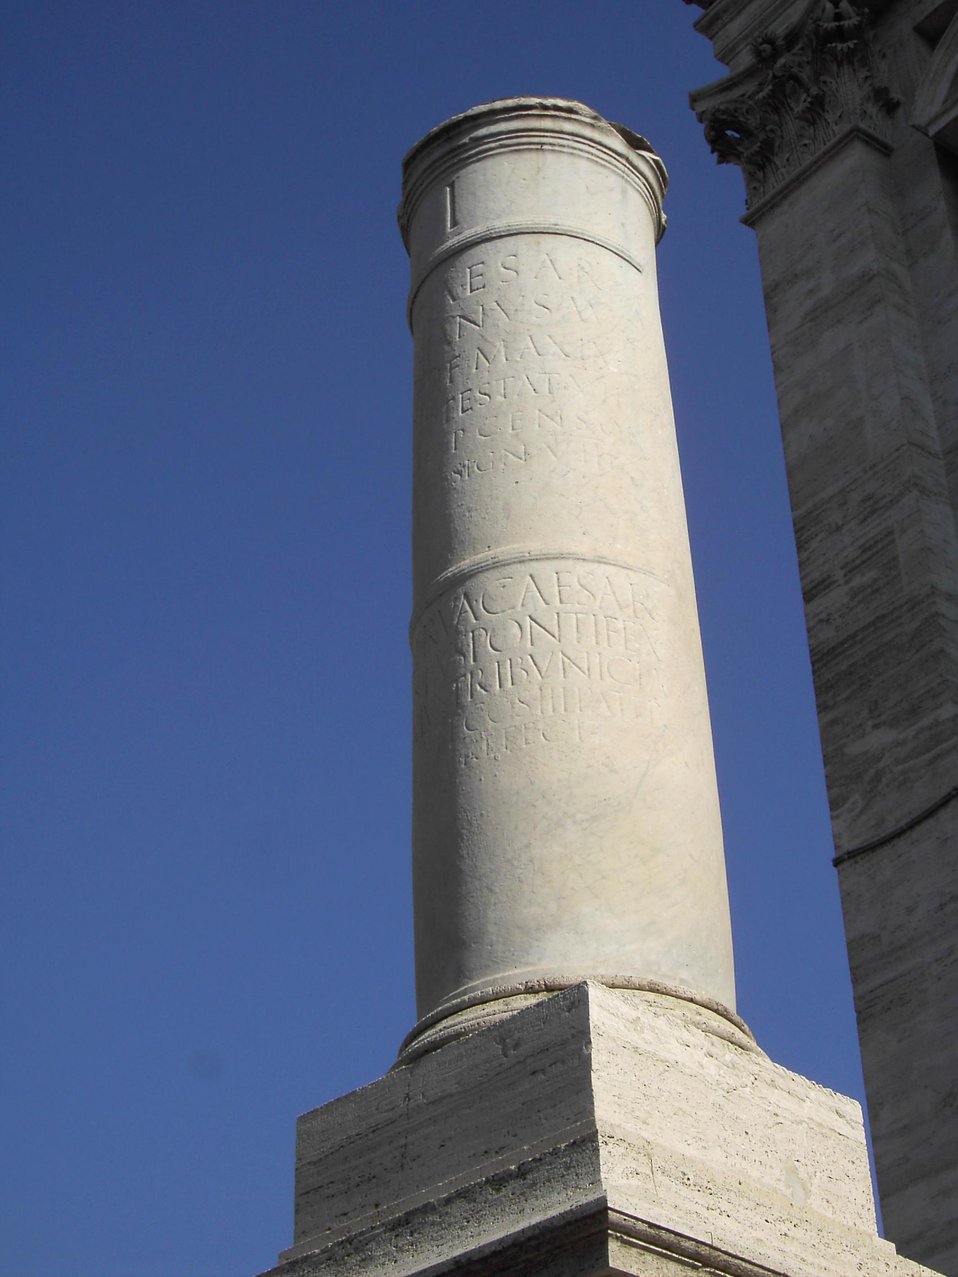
Campidoglio - il miliarium